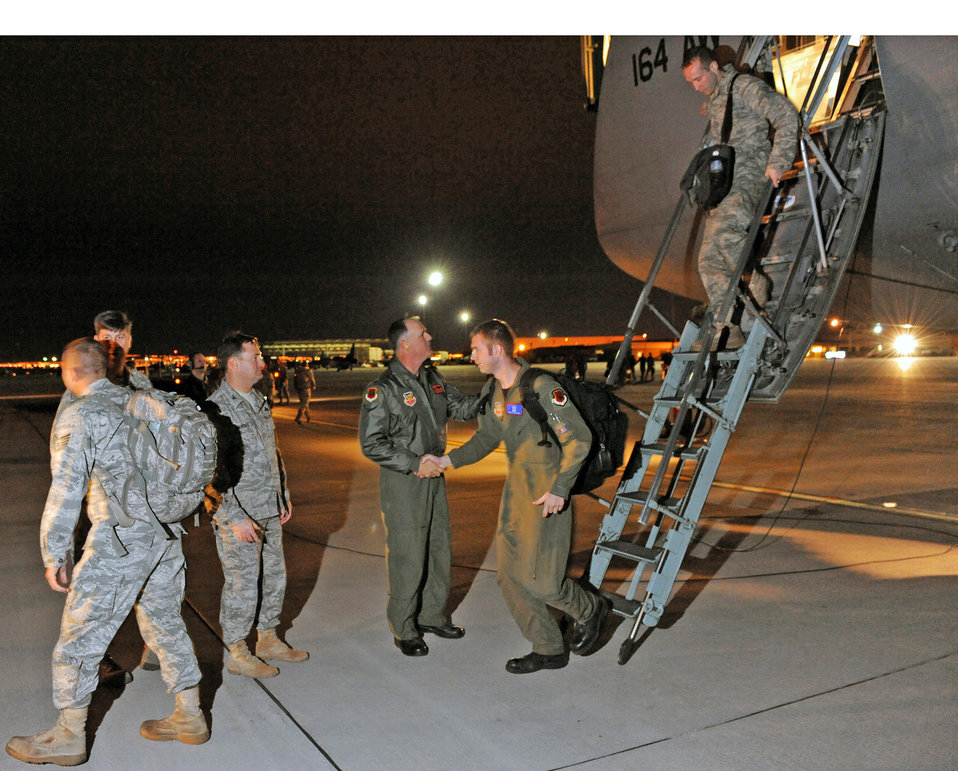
Creech Airmen return from Operation Unified Response mission

Col. William Brandt and Col. James McKenzie welcome Airmen as they returned home from supporting Operation Unified Response March 5, 2010 at Nellis Air Force Base, Nev. Colonel Brandt is the 432nd Operations Group commander and Colonel McKenzie is the 432nd Maintenance Group commander.